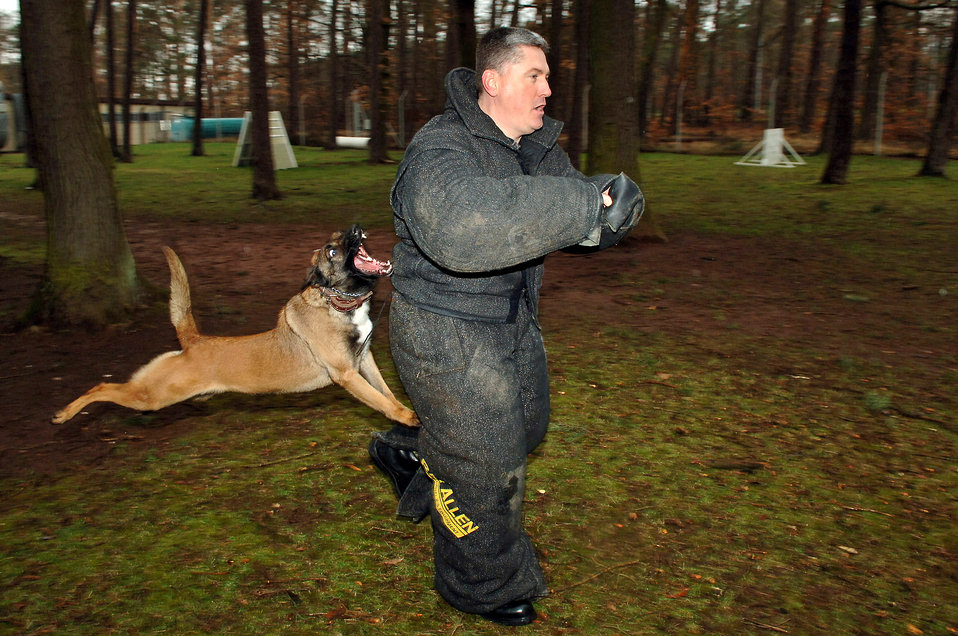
Some training can be a challenge

Senior Master Sgt. Robin McNatt, first sergeant for the 435th Security Forces Squadron at Ramstein Air Base, Germany, helps train a military working dog at the base.